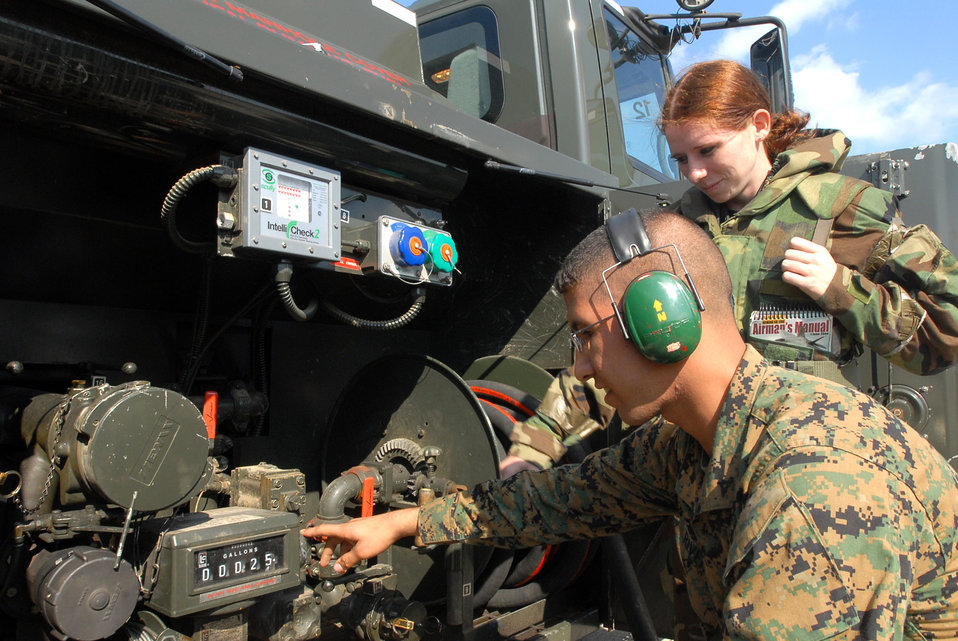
Operational readiness exercise tests Airmen, Marines

Marine Lance Cpl. Joseph Rivera and Airman 1st Class Christina Flake look at the fuel gauge of a R-11 fuel truck Dec. 6 at Kadena Air Base, Japan, as part of the maintenence process to ensure the fuel truck is operating correctly. Airmen from the 18th Wing joined with elements from the 1st Marine Aircraft Wing to conduct a joint operational readiness exercise Dec. 3 to 7. Corporal Rivera is with the Marine Air Group 12 and Airman Flake is with the 18th Logistic Readiness Squadron.